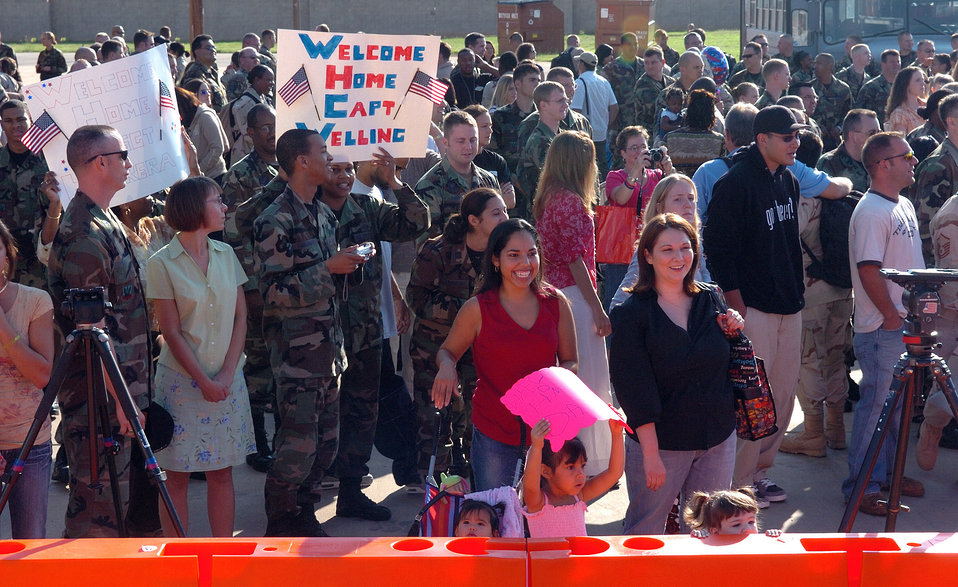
Airmen return from deployment

Family and friends anxiously await the return of Airmen to Dyess Air Force Base, Texas, on Sept. 13, who deployed in support of operations Enduring Freedom and Iraqi Freedom.